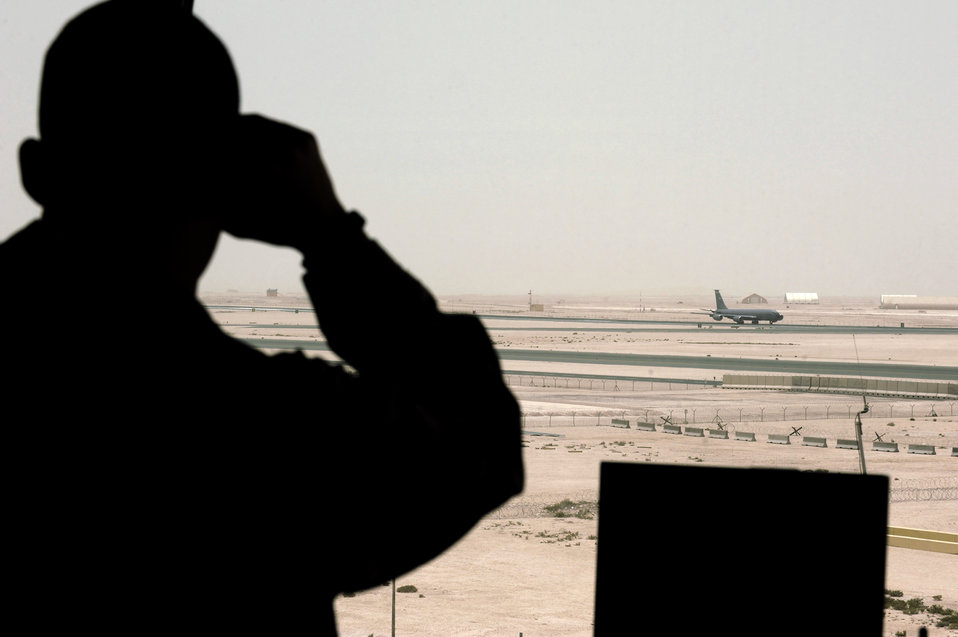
Controllers keep aircraft moving

Senior Airman Stephen Boniol monitors a KC-135 Stratotanker as it rolls on its takeoff run May 18 at an air base in Southwest Asia. Airman Boniol and fellow air traffic controllers use binoculars to monitor everything on the flightline from moving aircraft to support equipment and foreign object debris. Airman Boniol is a native of Glenmora, La., and is deployed from Alexandria Air National Guard Base, La.